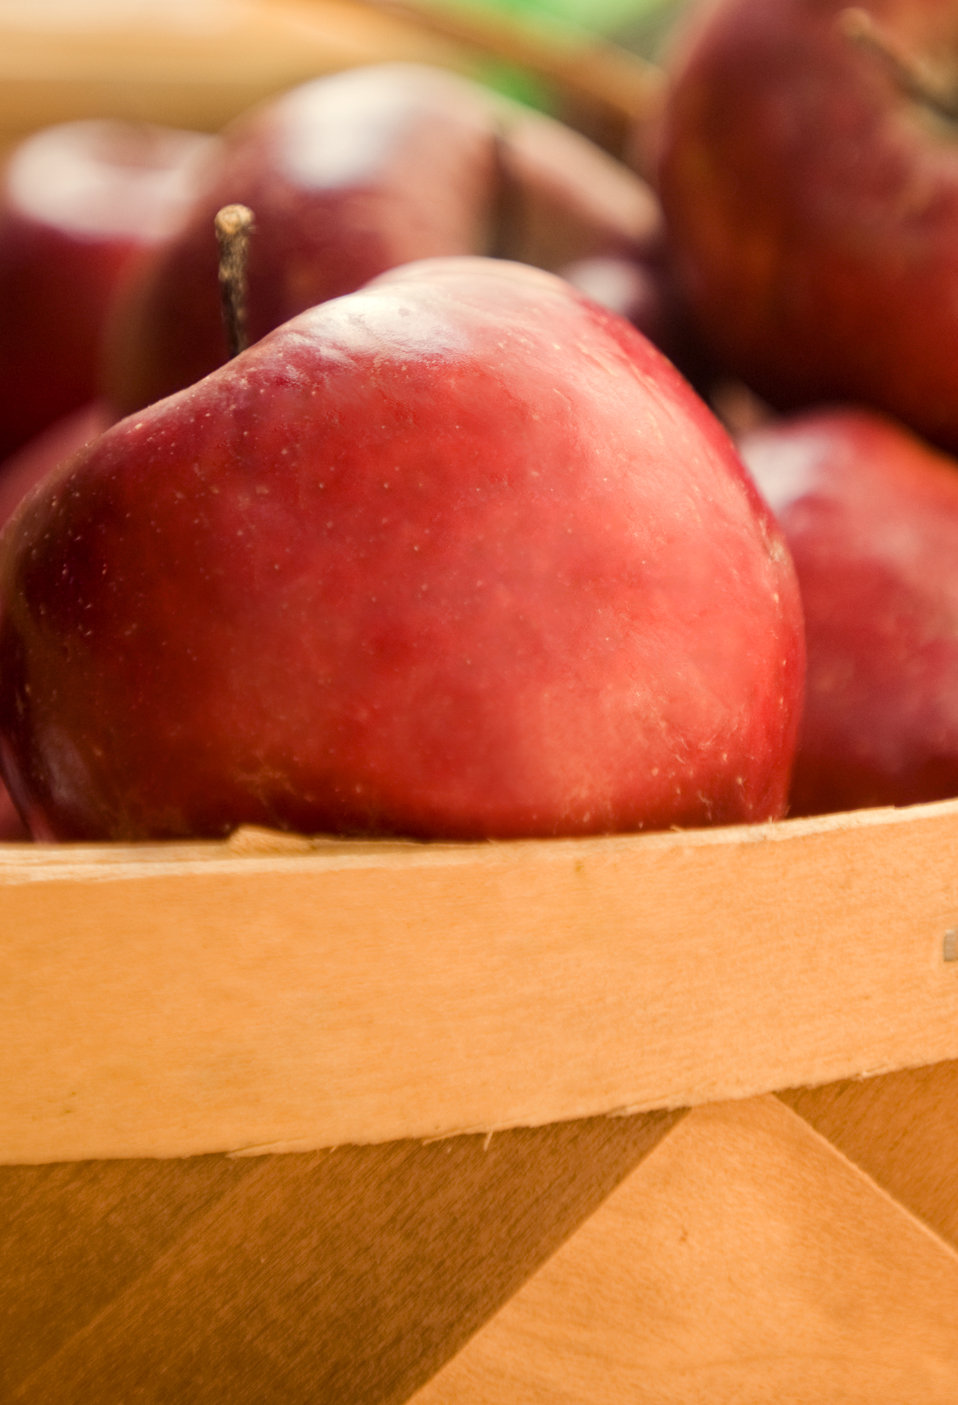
Close-up of a basket of apples

This image was captured in the produce section of a mobile Georgian farmers market, and depicts a close-up view of a basket of Rome Beauty apples, which is a variety that is available each year from September through July.